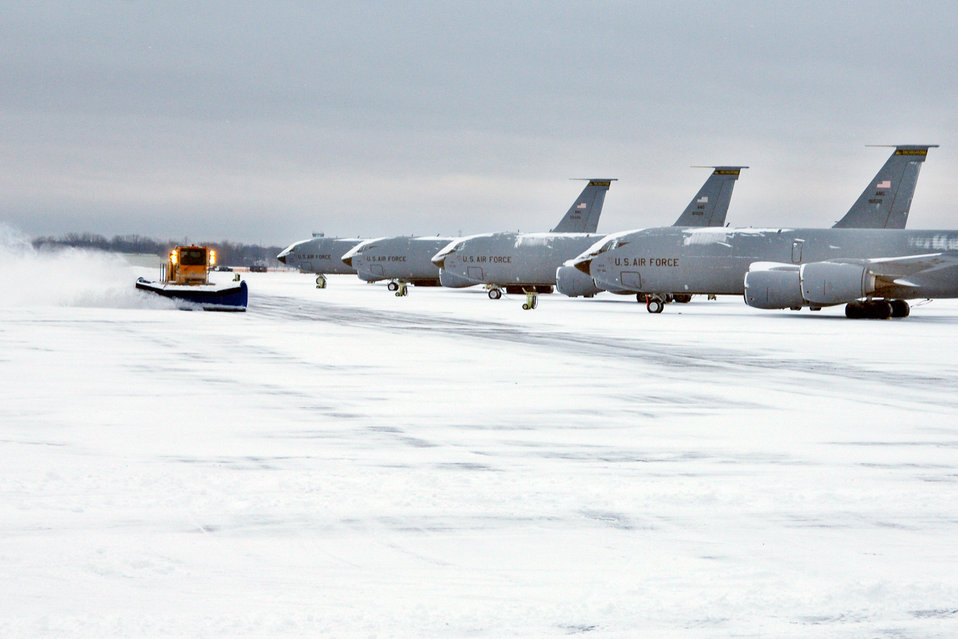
Winter wonderland

On Feb. 10, 2010, a wing snow removal crew clears snow from the active runway areas at Selfridge Air National Guard Base, Mich., after a winter storm dropped more than 5 inches of snow on the base.